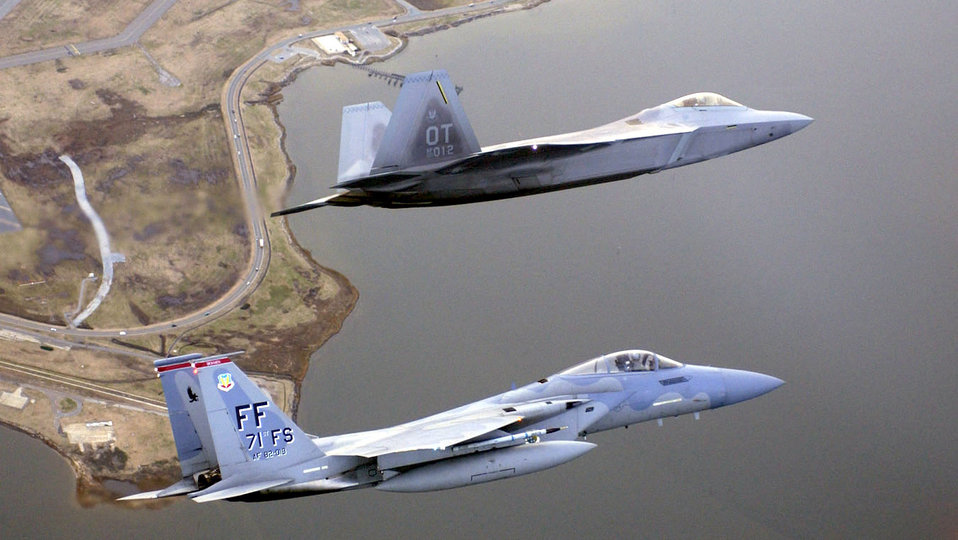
An Eagle and Raptor

LANGLEY AIR FORCE BASE, Va. -- An F/A-22 Raptor and an F-15 Eagle fly over Virgina. The F/A-22's advanced features mean that the aircraft can get to targets faster and undetected, stay longer, get the first shot, and gather and share information in real time with other combatants.